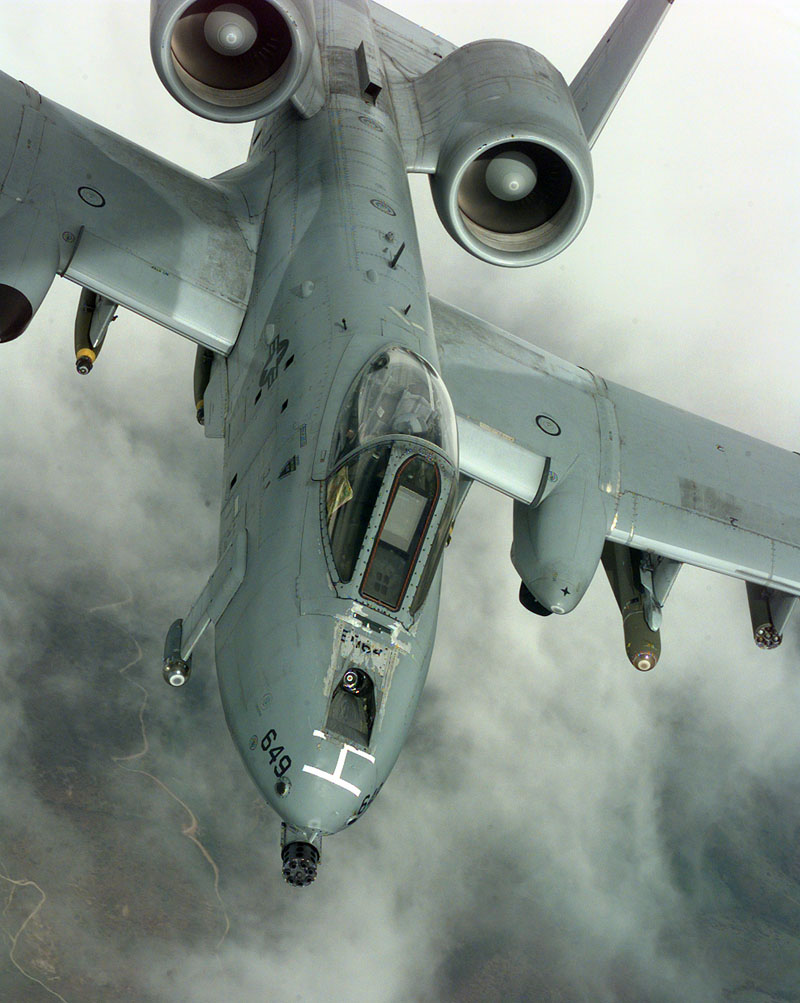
Thunderbolt II

1990's -- An A-10 Thunderbolt II, from the 52nd Fighter Wing, 81st Fighter Squadron, Spangdahlem Air Base, Germany, in flight during a NATO Operation Allied Force combat mission. The